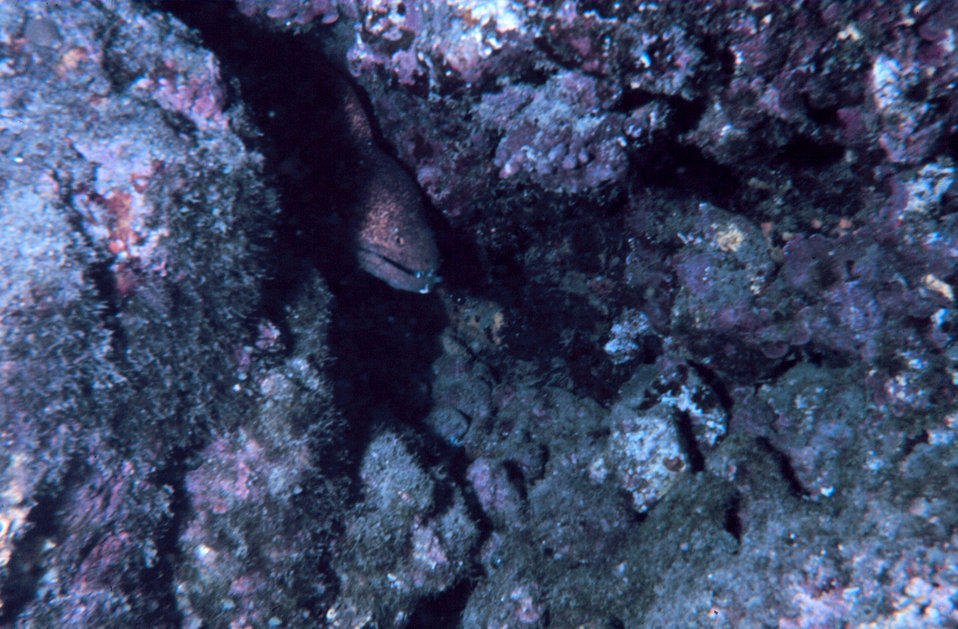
Gymnothorax flavimarginatus - Moray eel living in crevasse in reef.